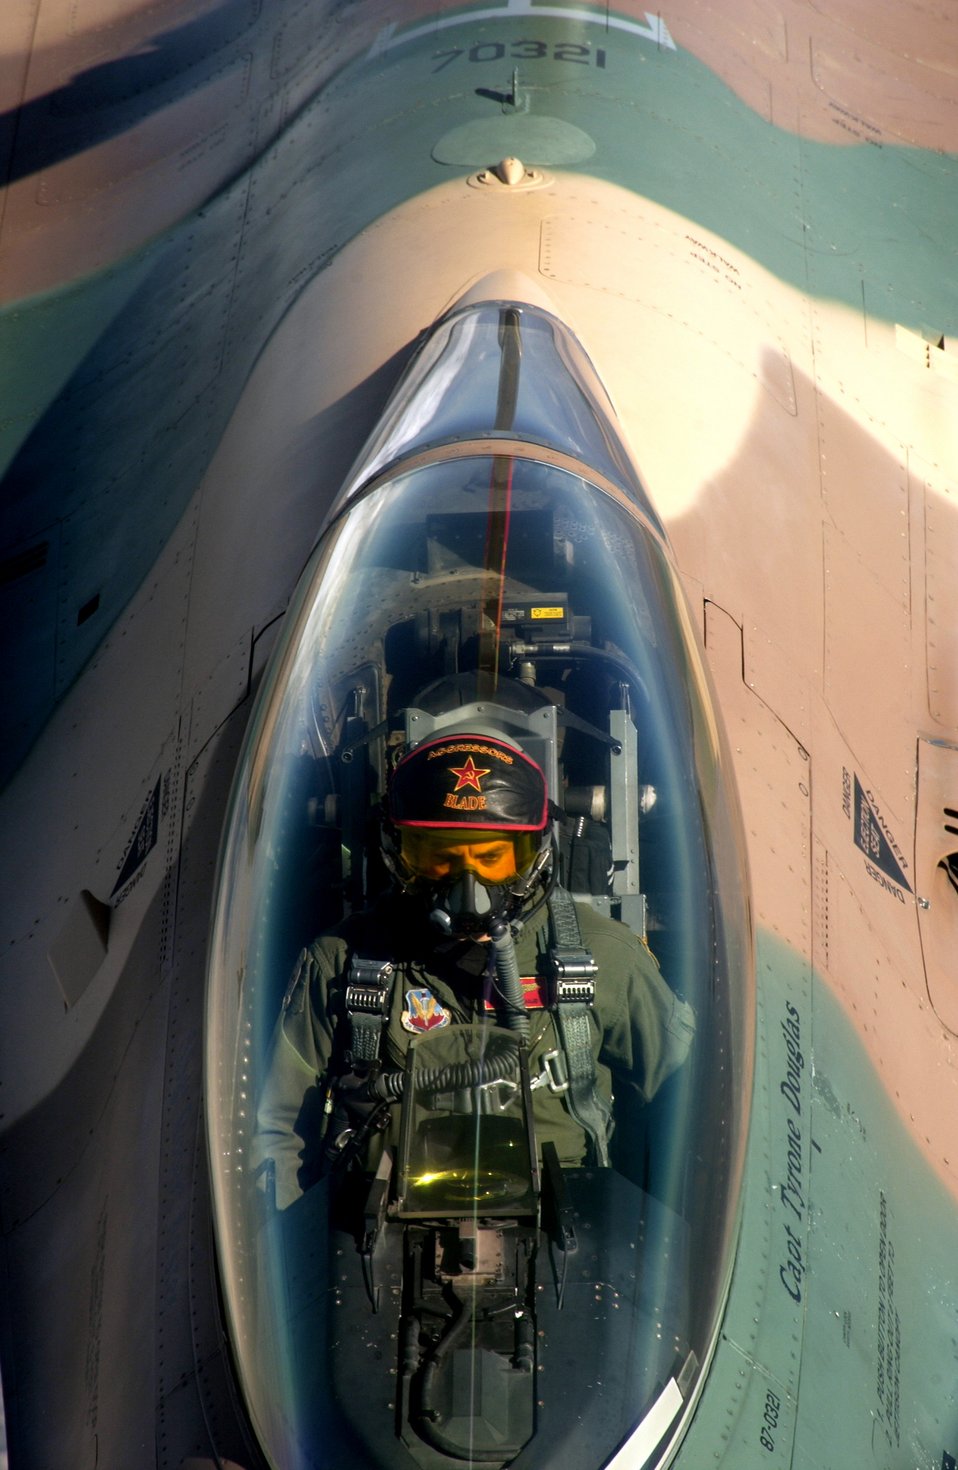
Skills tested

An F-16 Fighting Falcon approaches the boom on a KC-135 Stratotanker to refuel Oct. 19 during Red Flag 07-1 at Nellis Air Force Base, Nev. Red Flag tests aircrews' warfighting skills in realistic combat situations. The F-16 is with the 64th Aggressor Squadron at Nellis AFB.